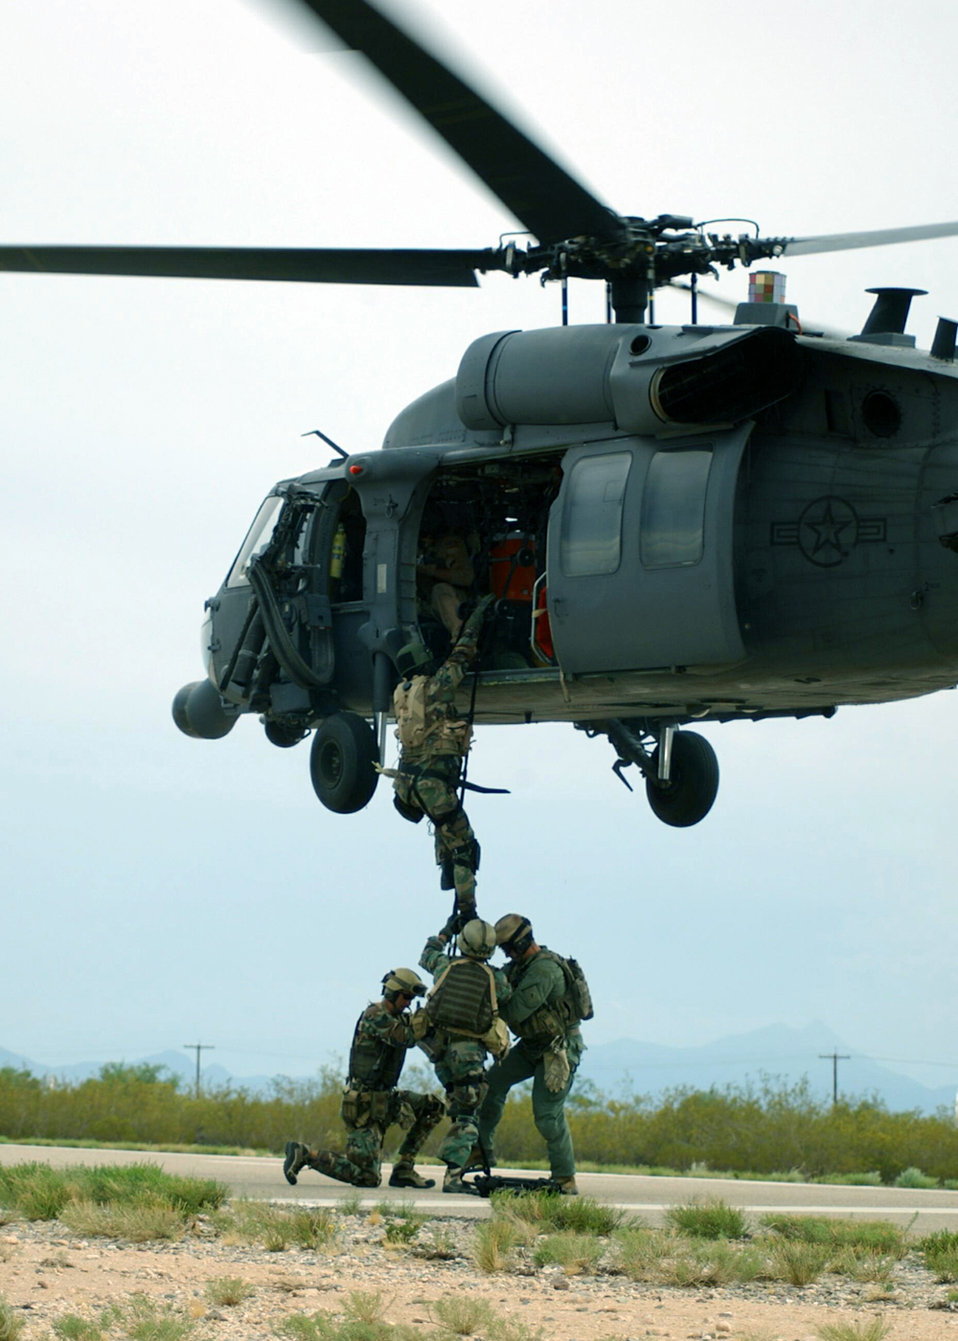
Rescue me!

DAVIS-MONTHAN AIR FORCE BASE, Ariz. -- Pararescuemen from the 48th Rescue Squadron climb up a rope ladder into an HH-60 Pave Hawk during training here Aug. 16.